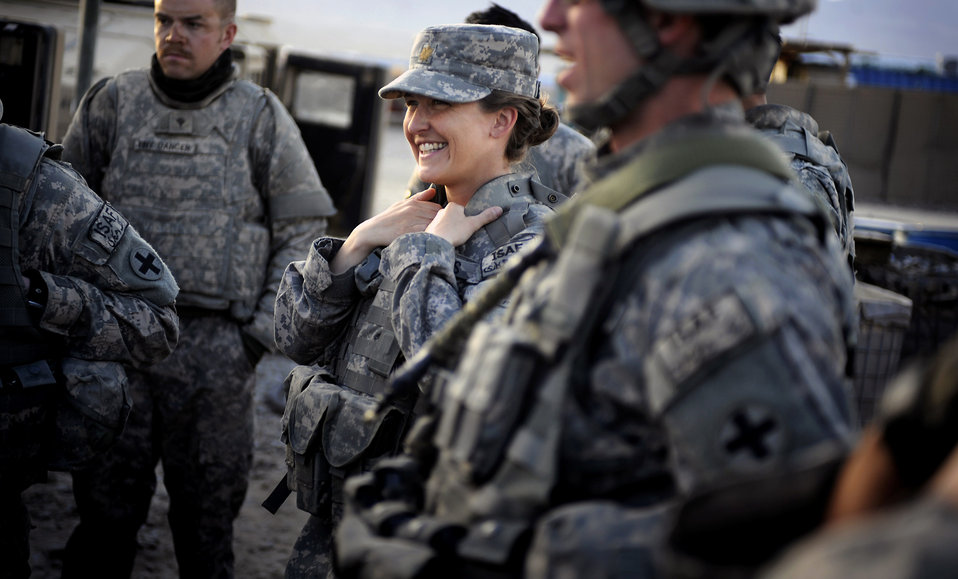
Providing reconstructive assistance, hope to Afghan homeland

Maj. Kimberly Riggs shares a lighter moment with Soldiers of the Paktya Provincial Reconstruction Team Security Forces Platoon April 13 at Forward Operating Base Gardez, Afghanistan. Major Riggs is the engineer officer in charge of the Paktya Provincial Reconstruction Team.